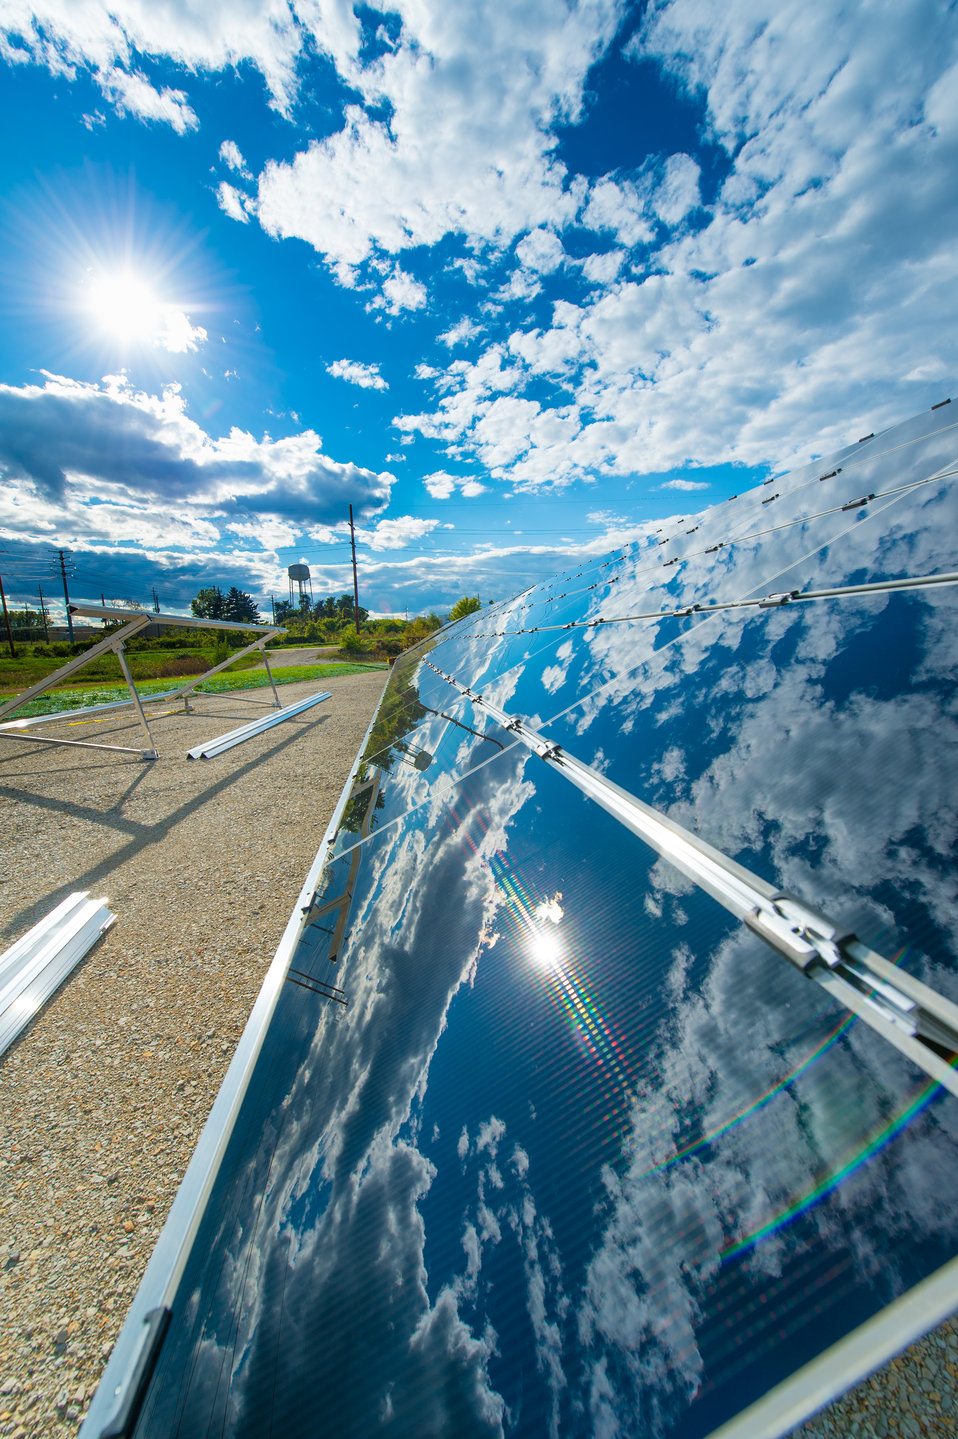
Argonne National Laboratory's 95 KW solar arrays are used by Argonne scientists and engineers to study different panel materials performance in the Midwest environment.

It also provides renewable power for ANL's Emergency Operations Center, saving about $9,400 and 94 metric tons of greenhouse gas emissions annually.